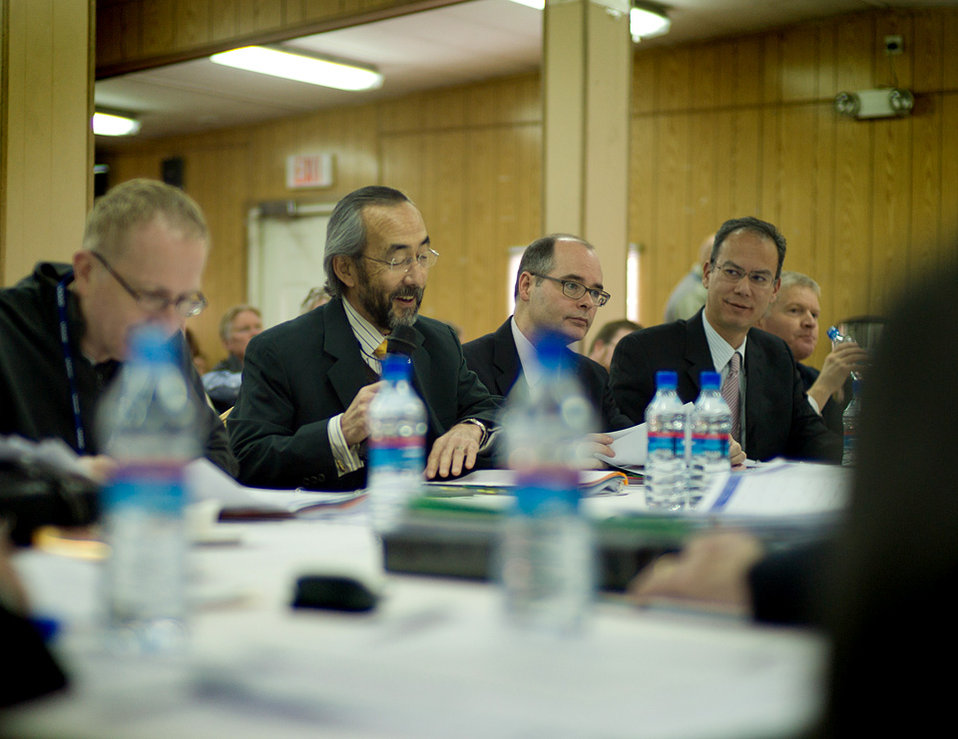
Ken, Economic Growth Review